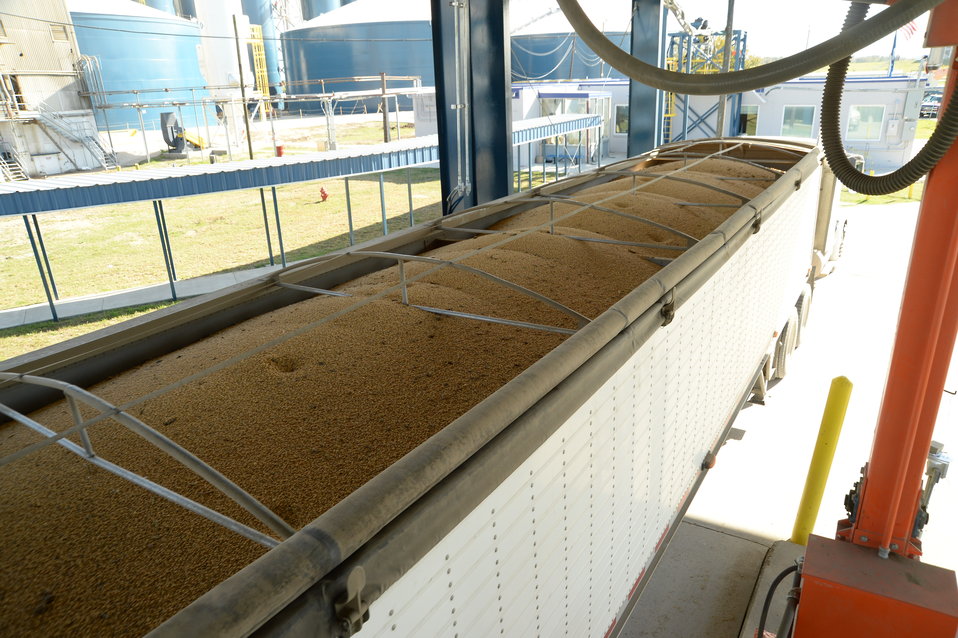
A sample of grain is removed from a barge for testing at the U.S. Department of Agriculture’s (USDA) Grain Inspection, Packers and Stockyards Administration (GIPSA) Federal Grain Inspection Service (FGIS) laboratory in New Orleans, LA on Tuesday, Nov. 19, 2013.